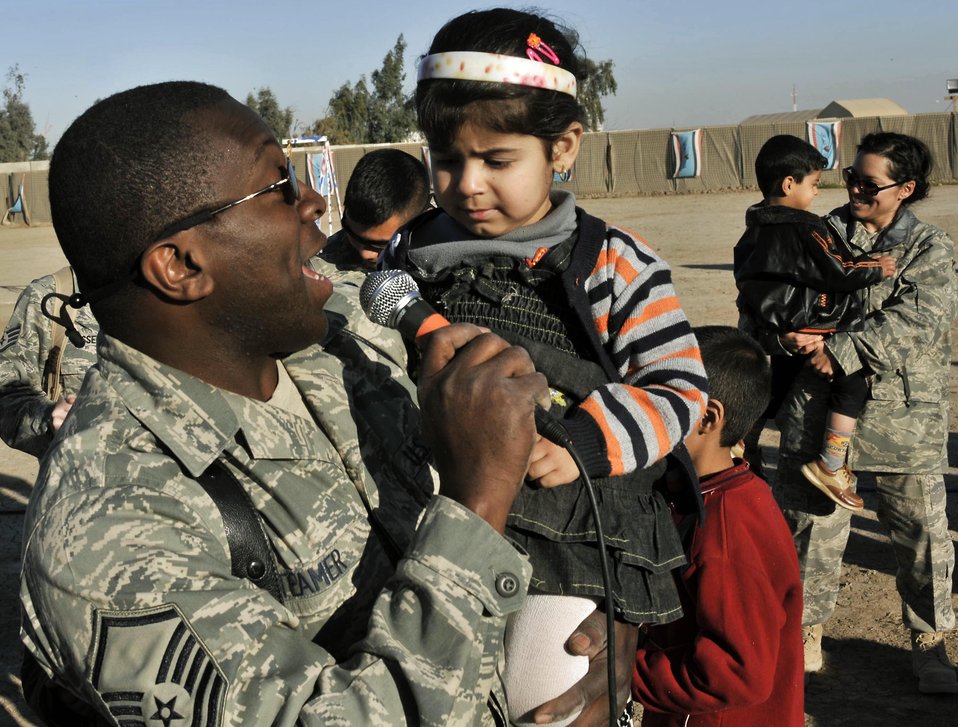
A special serenade

Master Sgt. John Teamer serenades an Iraqi child during a performance Dec. 18 in Baghdad, Iraq. Sergeant Teamer is the lead vocalist for